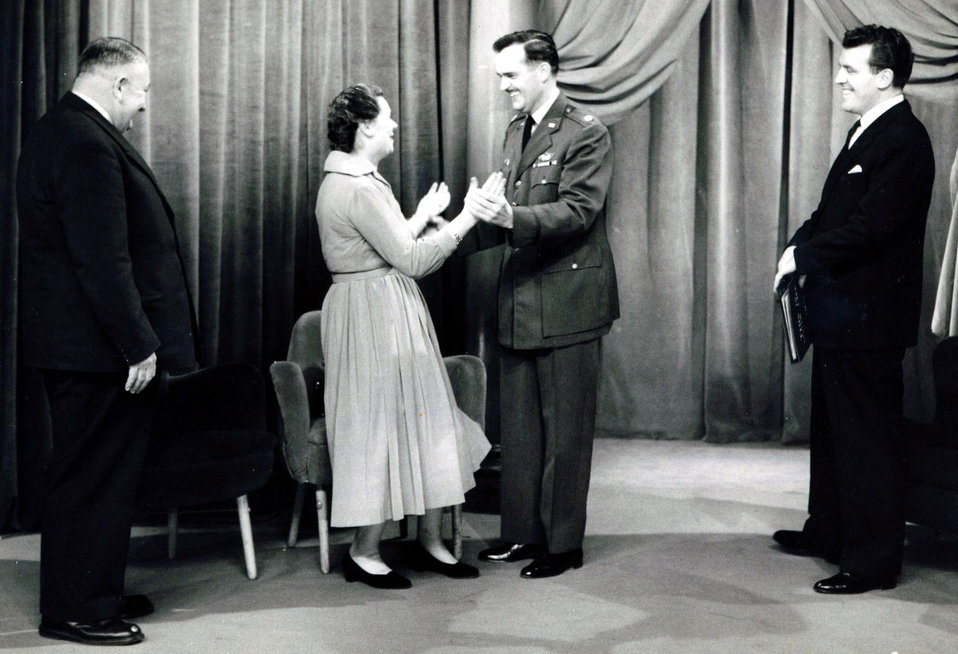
Reunited

FILE PHOTO -- Julien and Anne Brusselmans (left) were reunited with Maj. Hank Sarnow, a downed airman who stayed with them for a month to avoid capture by the Germans in World War II. The three appeared on